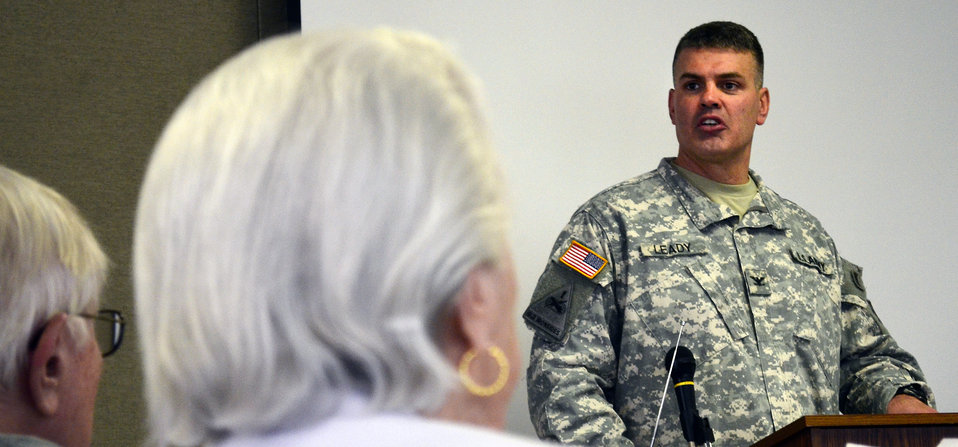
Discussing flood risk with California retirees

Col. Bill Leady, commander of the U.S. Army Corps of Engineers Sacramento District, discusses flood risk reduction measures with members of California State Retirees Chapter 2 during the group’s Jan. 7, 2012 luncheon in Sacramento, Calif. The former state employees invited Leady to describe Sacramento’s flood risk and what Sacramento residents can do to prepare for floods.